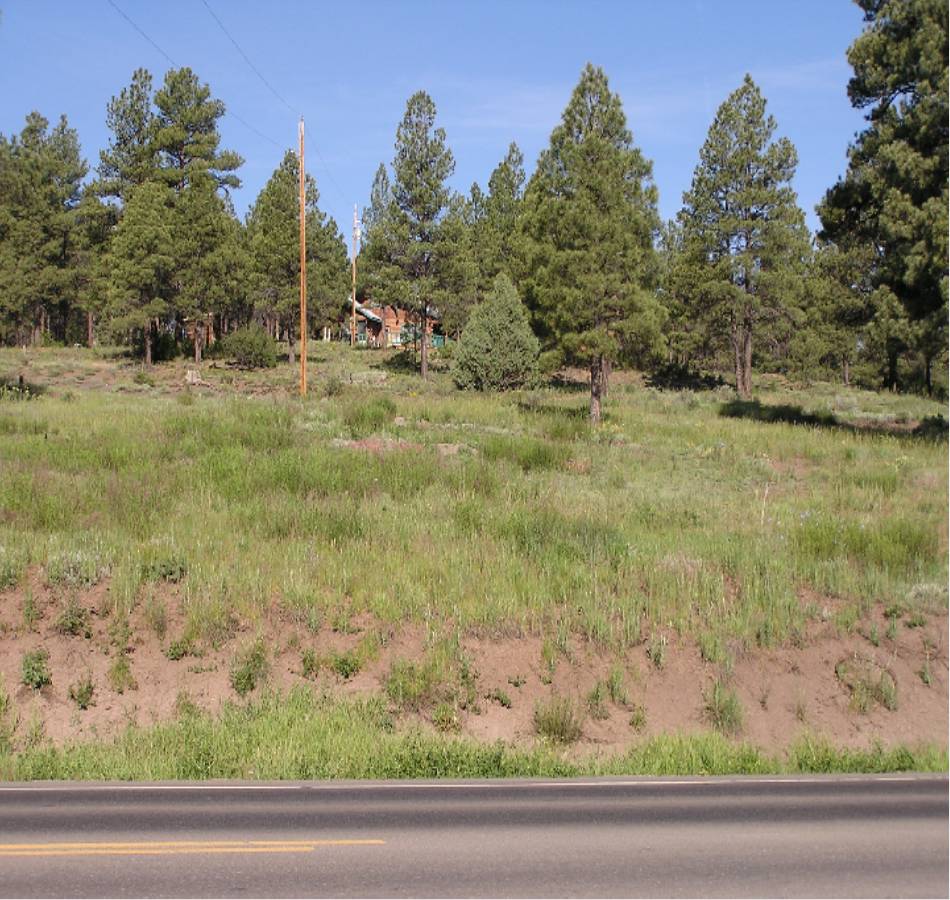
Pagosa Skyrocket Habitat

Because of its limited range and overlap with urban and agricultural areas, Pagosa skyrocket habitat includes partially developed lots and roadsides in Archuleta County, Colorado.

Photo credit: USFWS
...........................................................................

BACKGROUND:
Pagosa skyrocket (Ipomopsis polyantha) is an extremely rare plant endemic to two populations on Mancos shale outcrops in and around the Town of Pagosa Springs in Archuleta County, Colorado. This member of the phlox family (Polemoniaceae) grows as a rosette for one to many years; then flowers, produces seeds, and dies in its final year of life. In June and July when the species is flowering, numerous bees and other insects can be seen visiting its clusters of white flowers with small purple spots. These pollinators are essential to the survival of the species and are comprised primarily of native ground-dwelling solitary bees. Pagosa skyrocket habitat is unique, being comprised of barren shales where conditions are harsh and difficult for growth.

The species was discovered in 1899 by Charles Fuller Baker, an American naturalist, and described as a new species in 1904 by the well-known botanist Axel Rydberg. No comprehensive surveys were conducted until the mid-1980s, when it became a candidate for listing under the Endangered Species Act. Today the Pagosa skyrocket is threatened by commercial, residential, and agricultural property development; the associated new utility installations and access roads; and from the potential effects of climate change. Because of Pagosa skyrocket’s limited range, the fact that there are only two populations, its small population size, and numerous threats to the species, it was proposed for Endangered Species Act protection in 2010. A final listing is expected in 2011.

Eighty-eight percent of the areas where Pagosa skyrocket are found are private lands. The Endangered Species Act does not protect plants on private lands and therefore, all conservation actions on private land are voluntary. Funding is available to landowners wanting to conserve the species. Please contact Gina Glenne or Ellen Mayo at 970-243-2778 for further information on this species and ways that you can help with conservation and recovery.